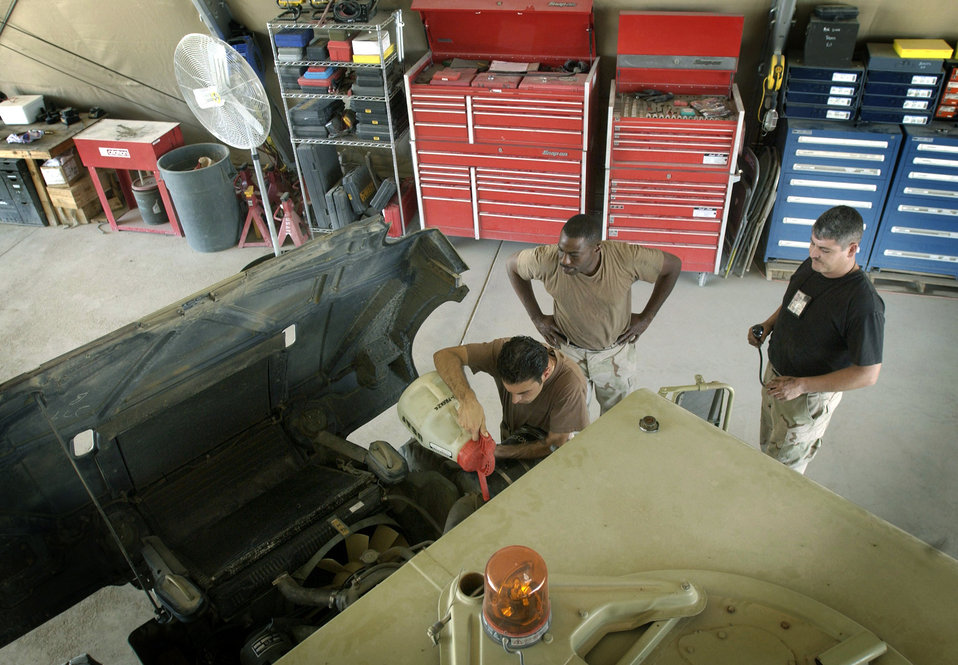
Maintainers keep perfect record

KARSHI-KHANBAD AIR BASE, Uzbekistan -- Staff Sgt. Jason Curra tops off a Humvee with antifreeze while Tech. Sgts. William Underwood (center) and Matt Cooper prepare to pressurize the entire cooling system to detect leaks. The vehicle mechanics are assigned to the 416th Air Expeditionary Group here where, for the past two months, they have maintained a 100-percent vehicle in-commission rate.